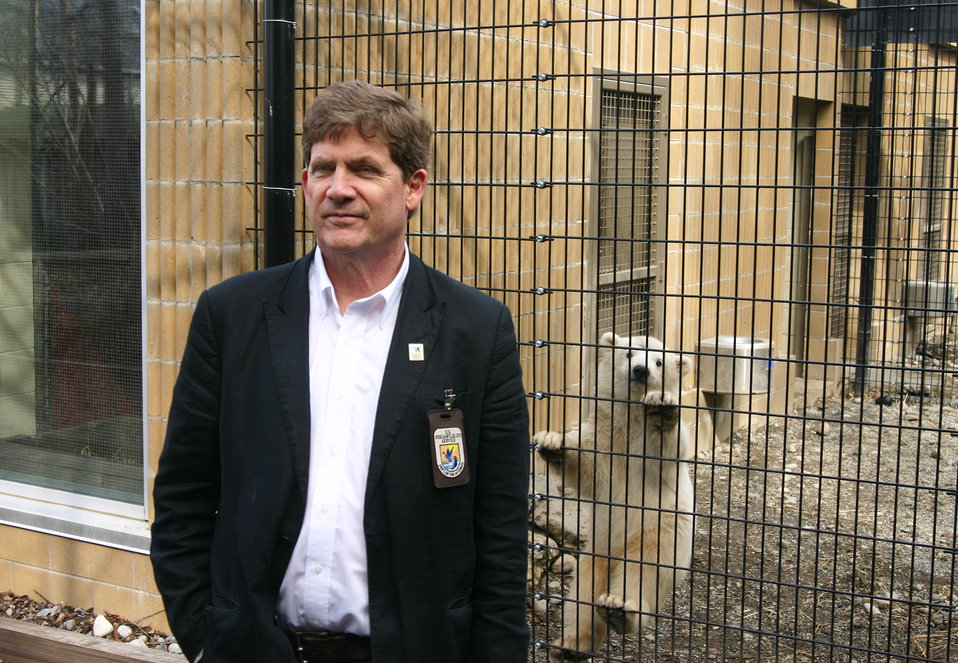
FWS Reg Director w Kali climbing

FWS Regional Director Geoffrey Haskett with Kali at the Alaska Zoo climbing the fence behind.